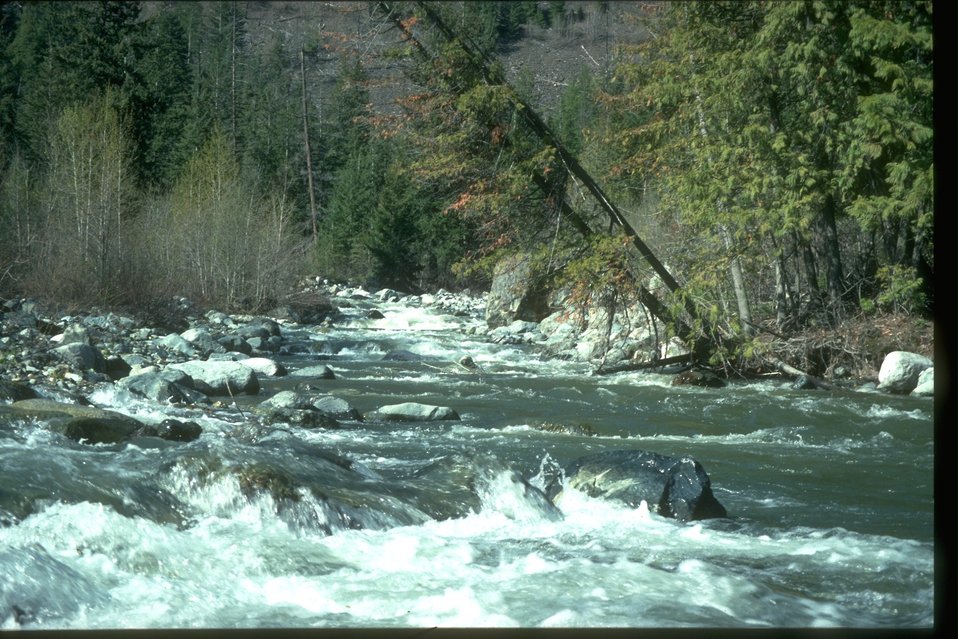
Colockum River on Blewett Pass in Chelan County, WA. (not BLM lands)